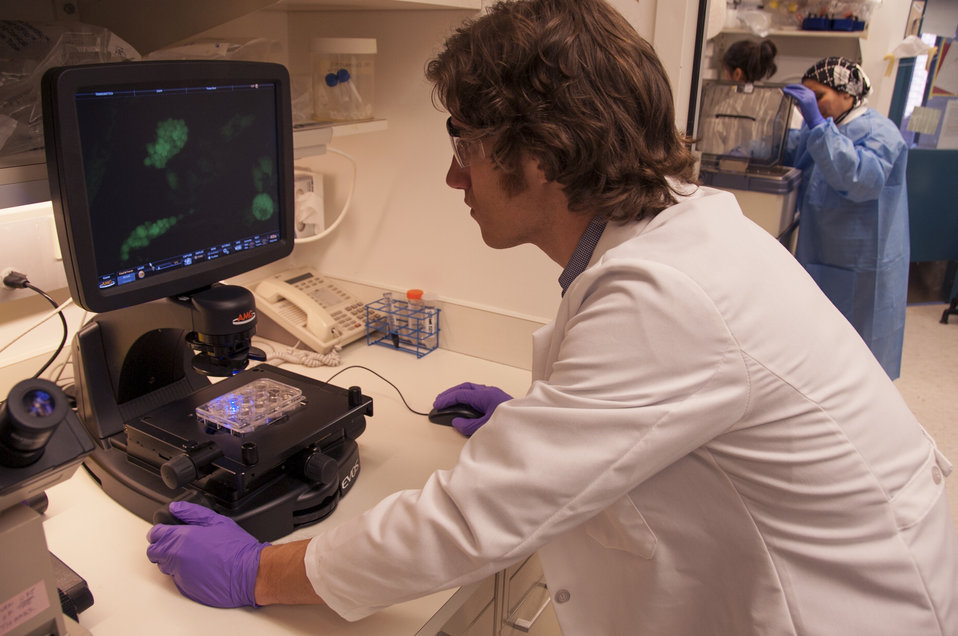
Stem Cell Research (0399)

Ross Marklein, Ph.D., a post-doctoral research fellow at FDA, examines images of stem cells in an FDA laboratory on the National Institutes of Health campus in Bethesda, Md.

To learn more about stem cell research, read this FDA Consumer Update:

Adult Stem Cell Research Shows Promise

This photo is free of all copyright restrictions and available for use and redistribution without permission. Credit to the U.S. Food and Drug Administration is appreciated but not required.

Privacy and use information: www.flickr.com/people/fdaphotos/